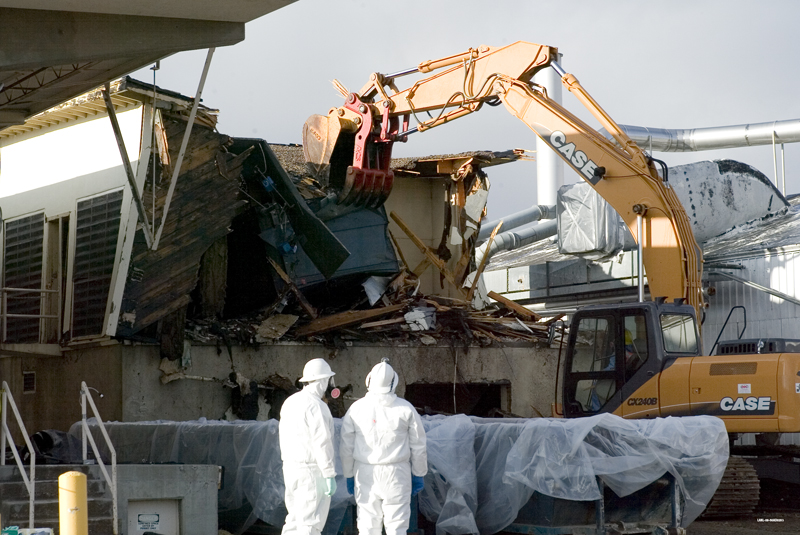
LANL - Building 21-167 demolition